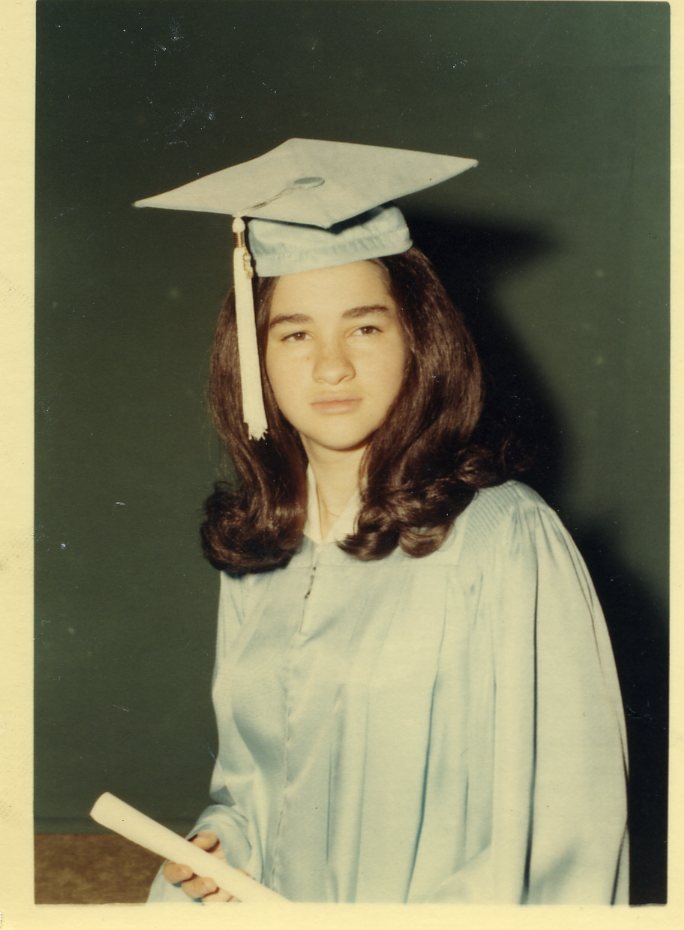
Youth 9

Judge Sonia Sotomayor in a cap and gown for her eighth grade graduation.